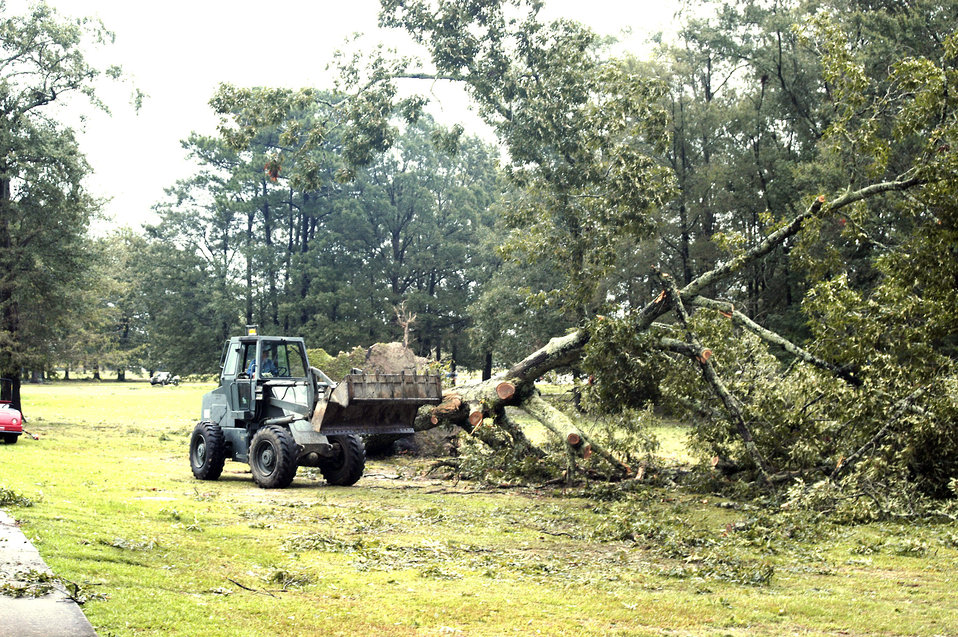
Columbus cleanup underway

COLUMBUS AIR FORCE BASE, Miss. - People continue cleanup efforts here after Hurricane Katrina passed through Aug. 29. Although it did not pass directly over the base, the base sustained more than $765,000 in damage. Maximum winds reached 50 knots.